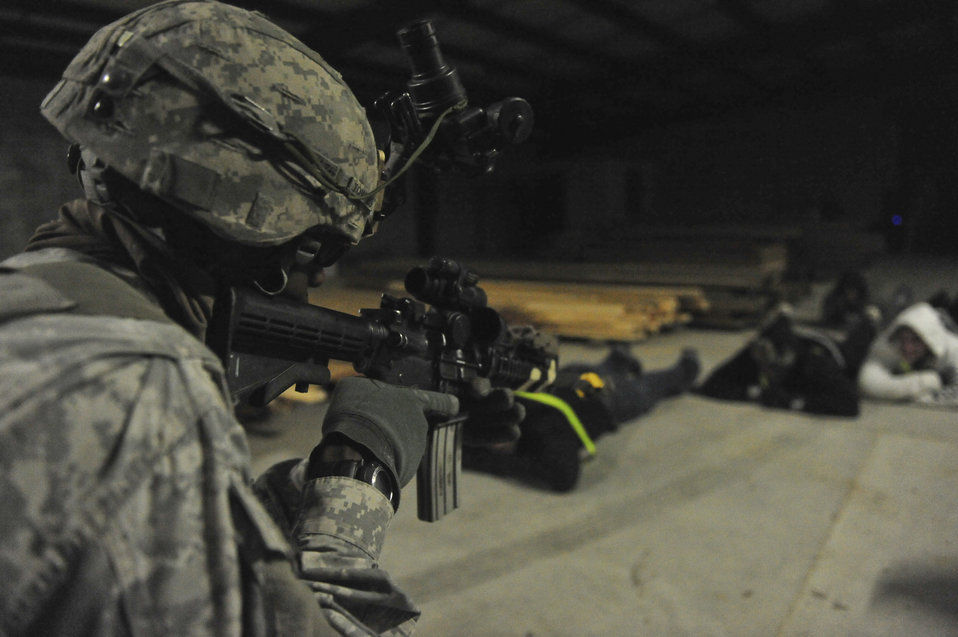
Army Pfc. Deshawn Townes, of the 2nd Battalion, 505th Parachute Infantry Regiment, 82nd Airborne Division, watches detainees during Joint Operations Access Exercise 12-01 in Fort Bragg, N.C., Feb. 12, 2012. The unit was part of the forward operating team that secured the building and searched the occupants after their jump out of the C-130 Hercules.